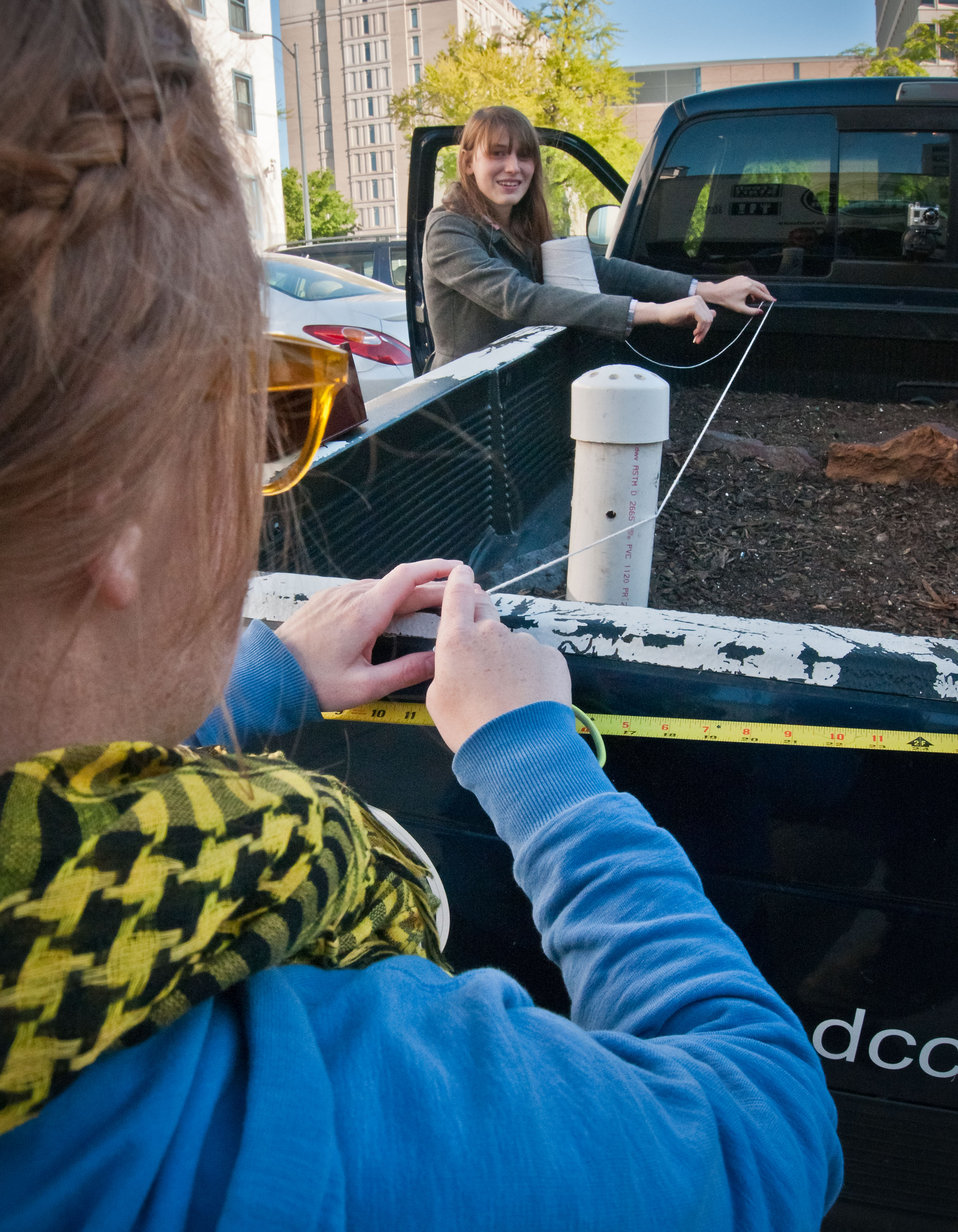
D.C. Central Kitchen’s Local Initiatives and Procurement Coordinator Joelle Johnson (left), tapes one end of a string to the Truck Farm’s tailgate, while Nutrition Out Reach Coordinator Lydia Mills (right) positions a grid string on the truck bed in Washington, D.C. on Friday, April 6, 2012. The grid will help identify the 25 soil sections that seeds and seedlings will be planted. The Truck Farm is a D.C. Central Kitchen and U.S. Department of Agriculture People’s Garden Initiative partnership that, like other Truck Farms around the country, will travel around the city to schools and community sites, teaching children about healthy eating and where their food comes from through the garden display in its truck-bed. Along with other local donors, the People’s Garden Initiative supports this “edible exhibit” by providing seedlings and educational materials. Ms. Mills is on staff with D.C. Central Kitchen for one year as part of AmeriCorps VISTA service.